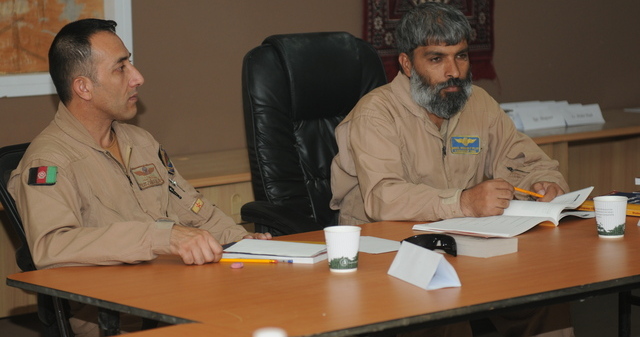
Lingo Learning

Afghan Air Force pilot Capt. Zabihullah (left) and pilot instructor Maj. Abdul Wodood (right) listen and take notes during an intensive language course at Kandahar Air Wing, on Kandahar Airfield, August 27, 2012. The pilots, along with maintenance airmen and an AAF fireman, spend 30 hours a week in this class learning English as an important part of their job.